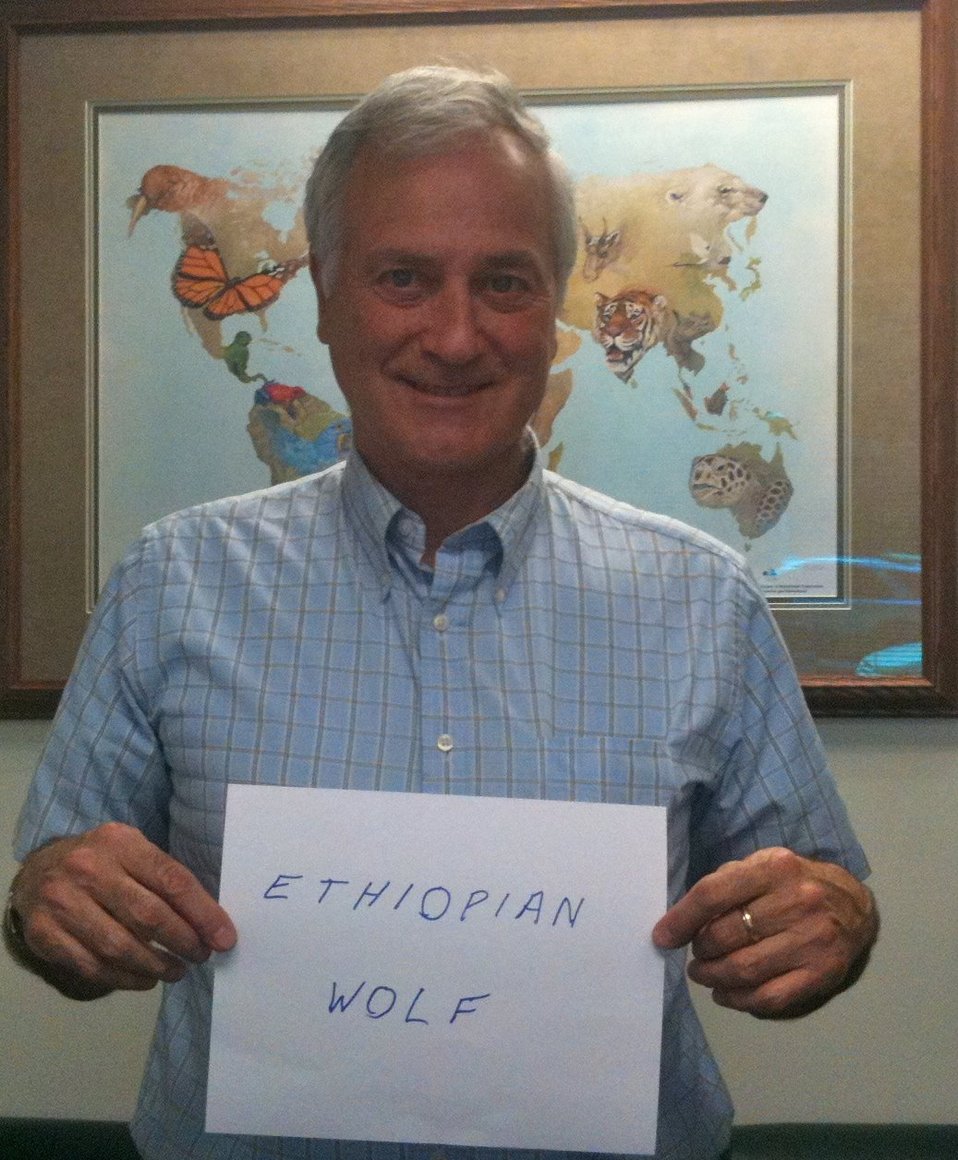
Herb Raffaele, 'Ethiopian Wolf,'

International Affairs participates in FFI's In Our Hands campaign